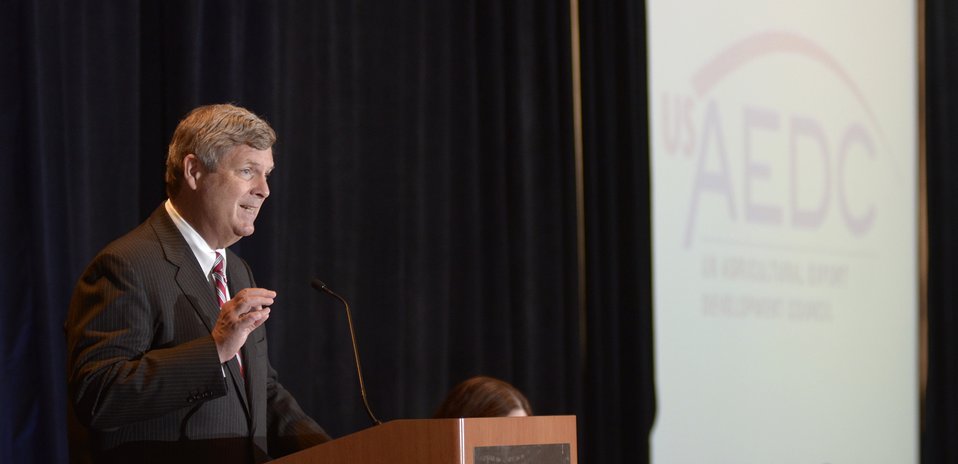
Agriculture Secretary Tom Vilsack presents keynote remarks at the U.S. Agricultural Export Development Council (USAEDC) Attaché Seminar, at the Westin Alexandria, in Alexandria, VA, on Wednesday, July 10, 2013. USAEDC is a non-profit private sector trade association that provides an exchange and coordination of information to promote the export of the products of U.S. agriculture. Their membership includes U.S. commodity trade associations, farmer cooperatives and state regional trade groups from around the country. In the interest of U.S. agricultural growers and producers their export promotion efforts, work in conjunction with the U.S. Department of Agriculture Foreign Agricultural Service.